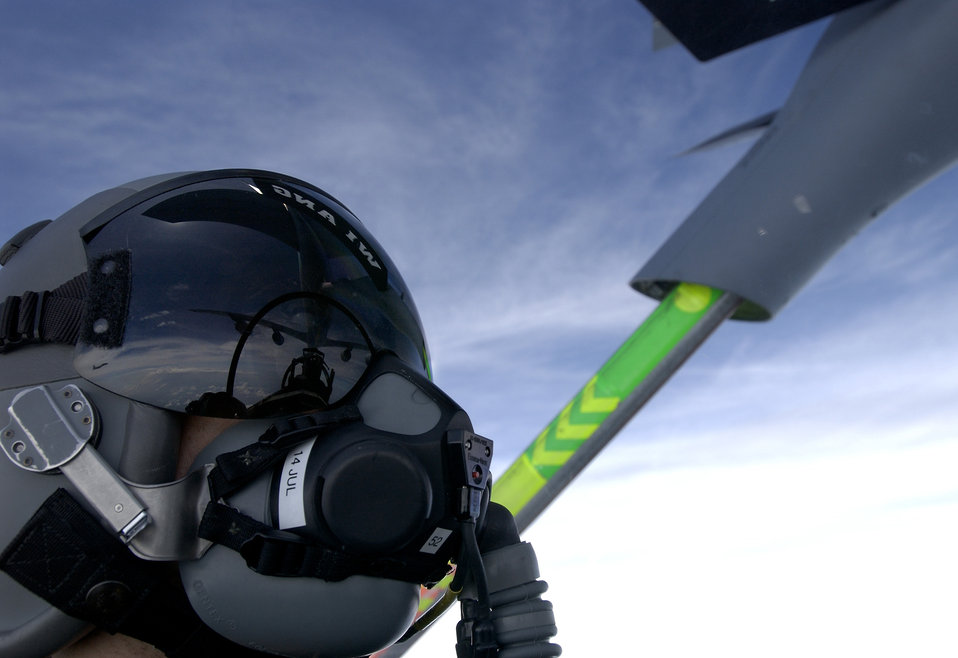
Sky gas station

OVER WASHINGTON -- An air refueling mission is reflected in an F-15 Eagle crewmember's visor during a combat air patrol mission here July 1. The F-15 crewmember's are assigned to the 94th Fighter Squadron at Langeley Air Force Base, Va., and the KC-135 is assigned to the Wisconsin Air National Guard's 128th Air Refueling Wing. The mission is in support of Operation Noble Eagle.